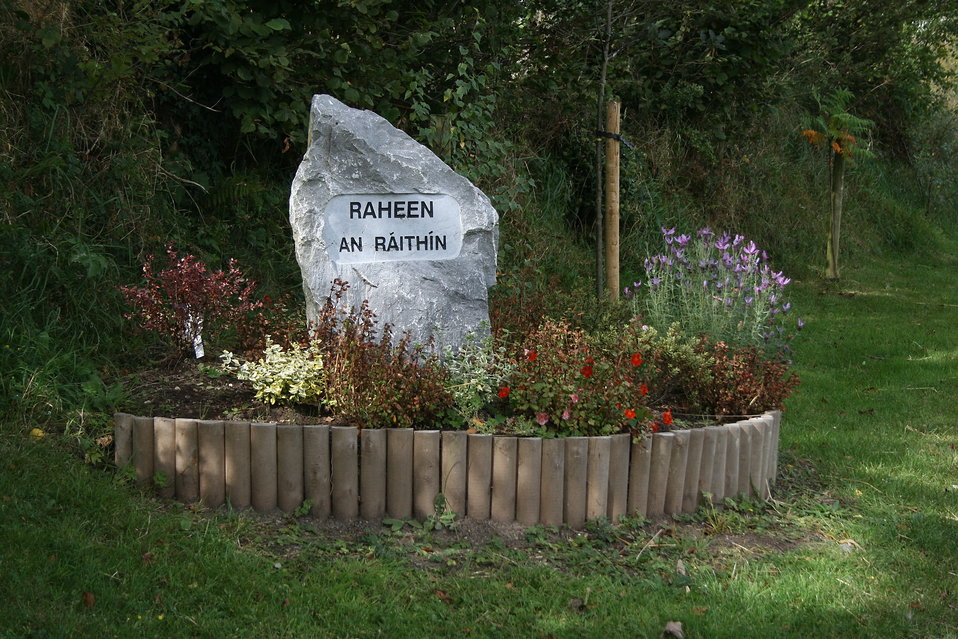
Raheen, County Laois, Ireland